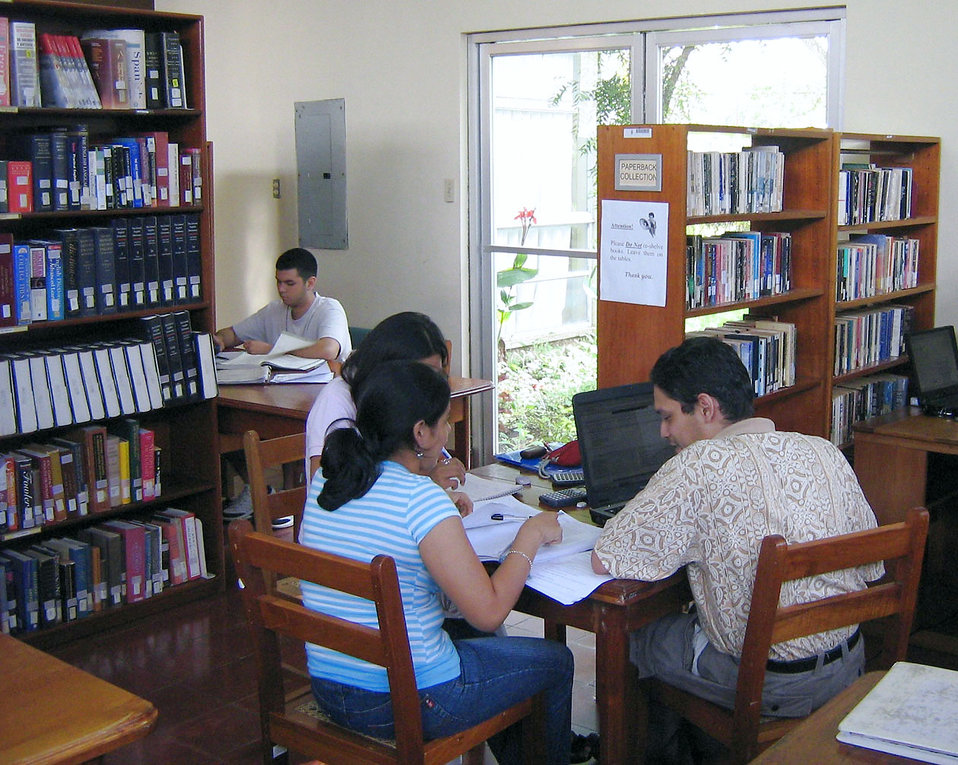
Dover aircrew delivers humanitarian supplies to Nicaragua

Students study in the Ave Maria University, Latin American Campus Jan. 21 in San Marcos, Carazo, Nicarauga. The university is building a new library and a C-17 Globemaster III aircrew of the Air Force Reserve's 326th Airlift Squadron from Dover Air Force Base, Del., delivered 18,000 pounds of humanitarian cargo consisting of desks, chairs, file cabinets and books to the Managua International Airport, Nicarauga.